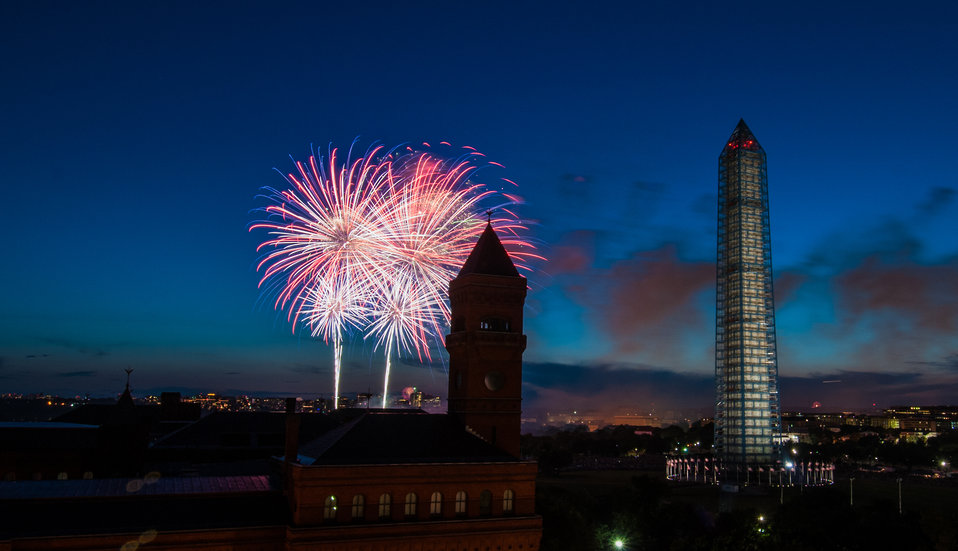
4th of July fireworks as seen from the U.S. Department of Agriculture (USDA) headquarters building, with the USDA Forest Service Yates Building in the foreground, left, and the Washington Monument in Washington, D.C., on July 4, 2013.